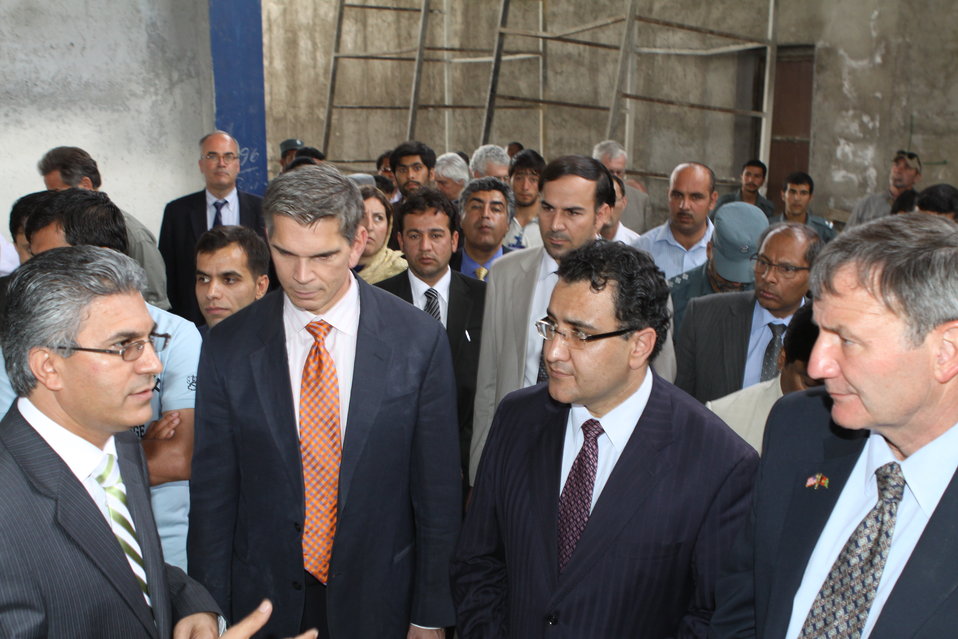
100525 Hirat Marble Conference 454